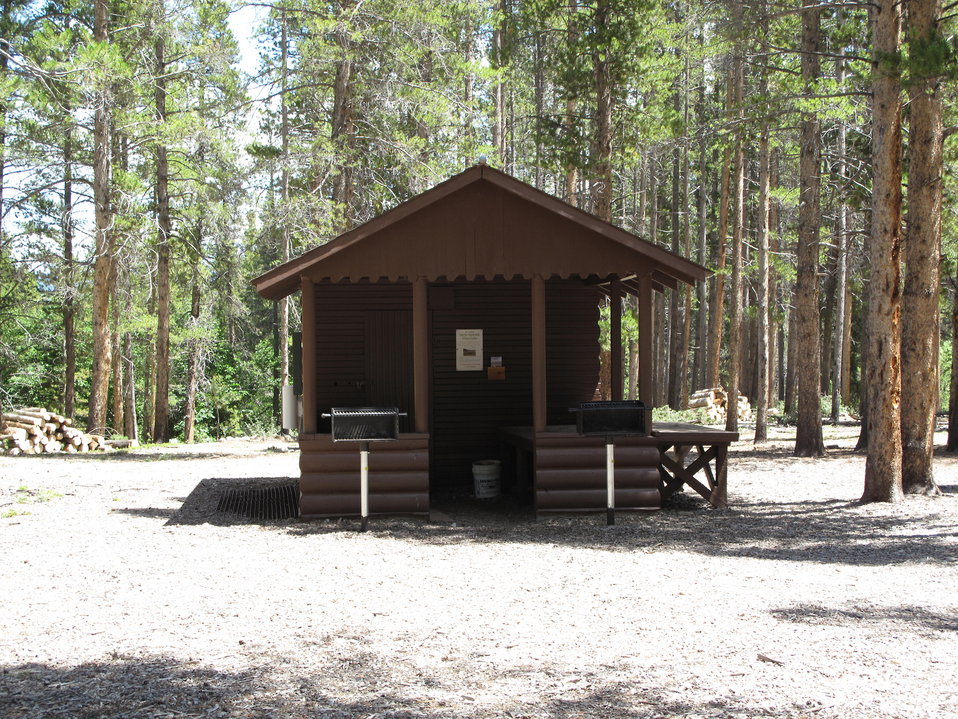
Leadville National Fish Hatchery

Covered rest area along the trail, which also features a handful of grills.